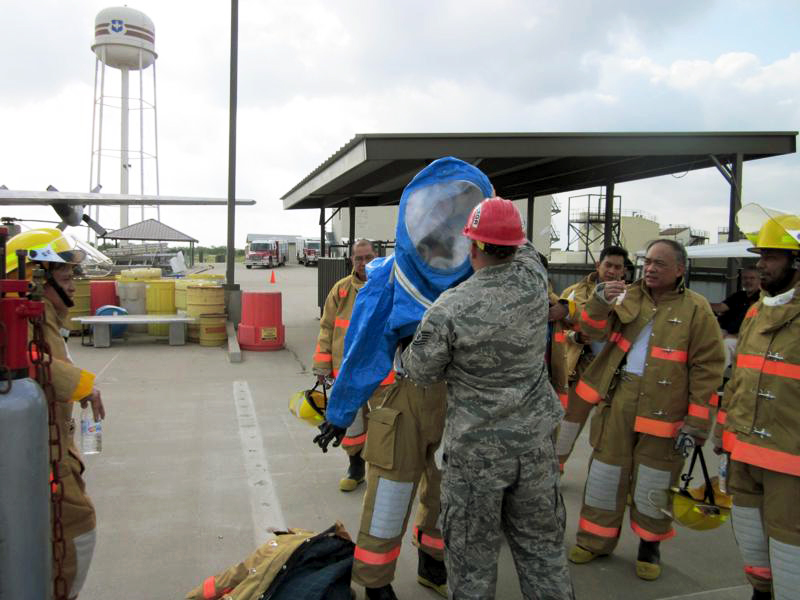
13th AF hosts international engineering exchange summit

Civil Engineers from the Asia-Pacific region participating in a hazardous material demonstration during a subject matter expert exchange June 4, 2010, called Pacific Unity at Goodfellow Air Force Base, Texas.